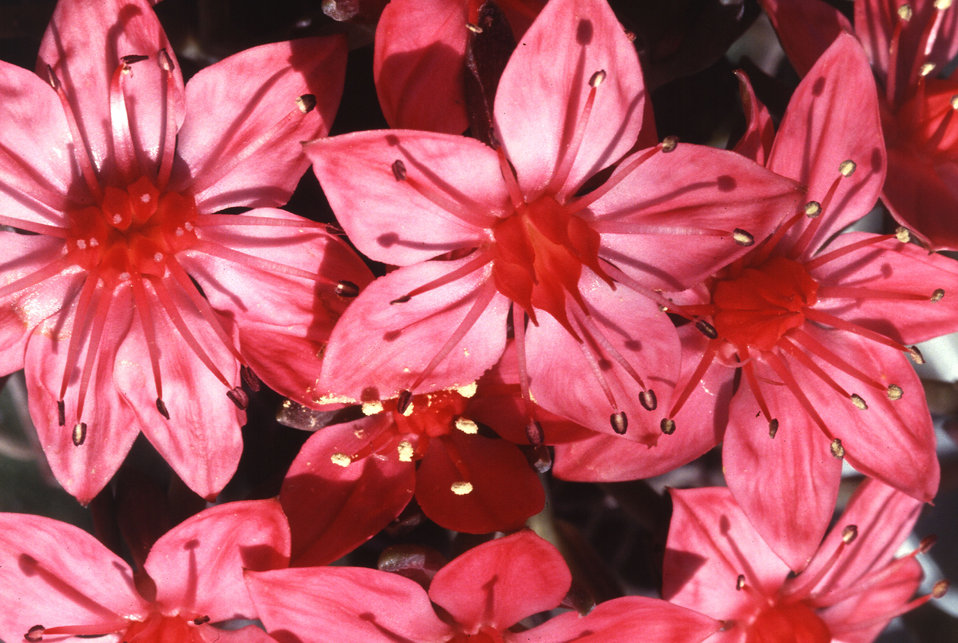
Tacitus bellus is a perennial Succulent plant with slowly clustering rosettes that are up to 10 centimeters in diameter appearing from May to July ranging in color from deep pink to red. The individual flowers are star-shaped with 5 petals USDA photo by Scott Bauer.